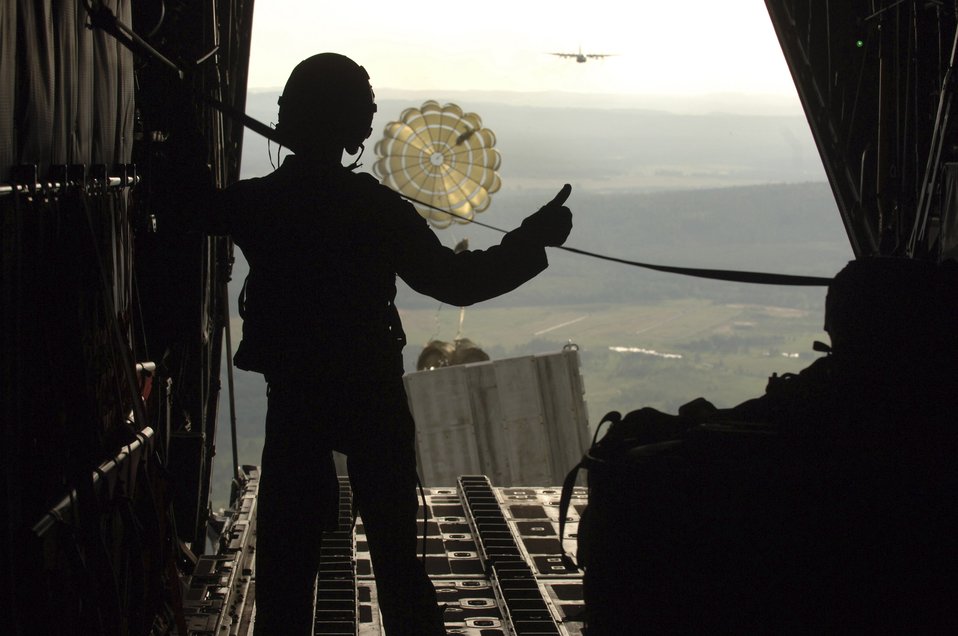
Load clear

Staff Sgt. John Columbia gives the